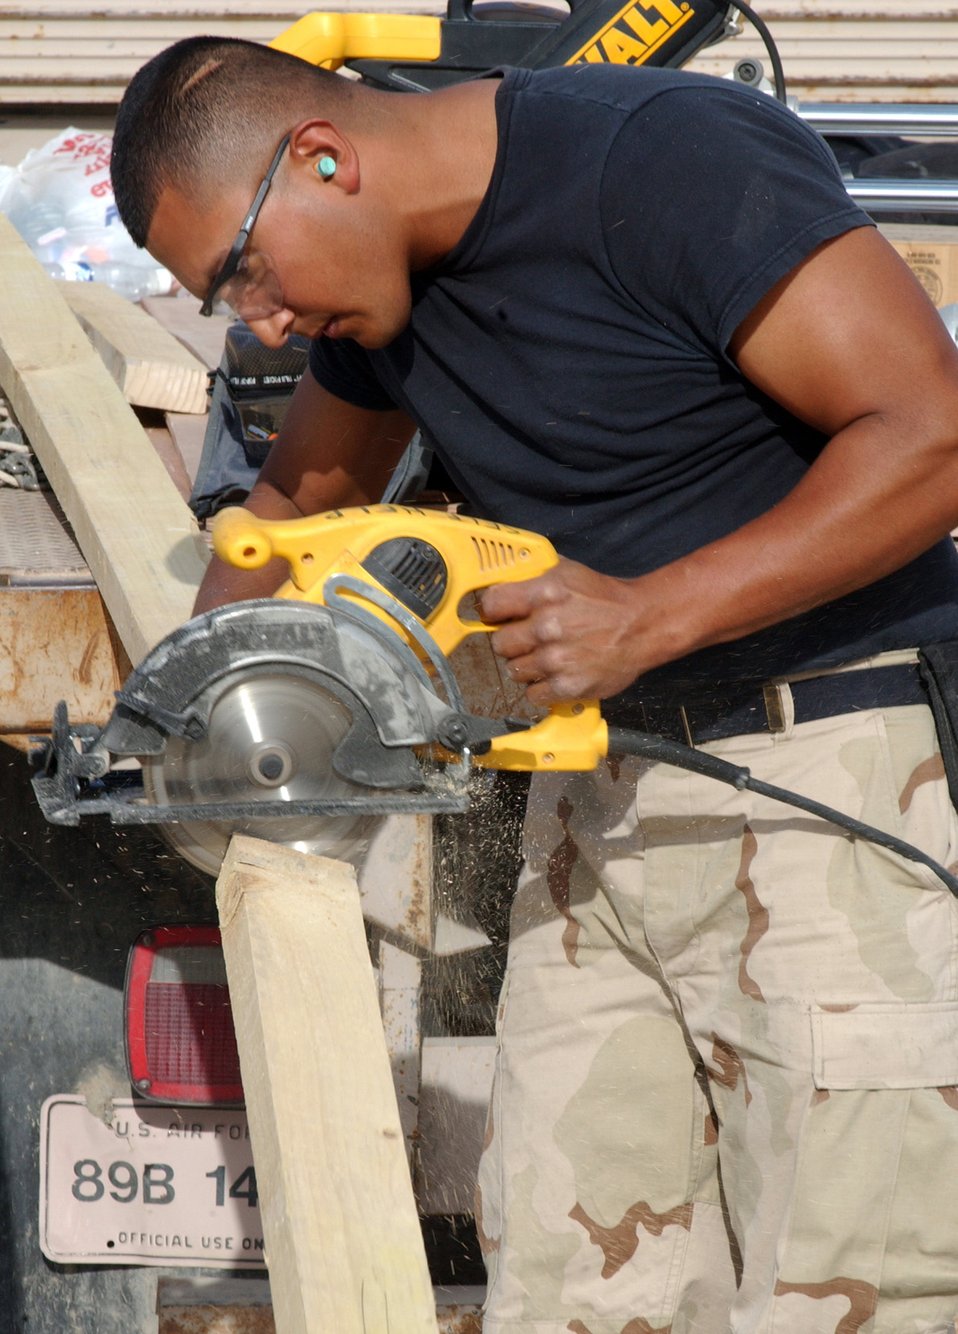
Flooring it

ALI BASE, Iraq (AFPN) -- The base fitness center is expanding with the addition of a separate aerobics room. The new tent is up, the breezeway between the two tents has been built and Senior Airman Omar Hernandez is building a frame for the flooring. Airman Hernandez is with the 407th Expeditionary Civil Engineer Squadron